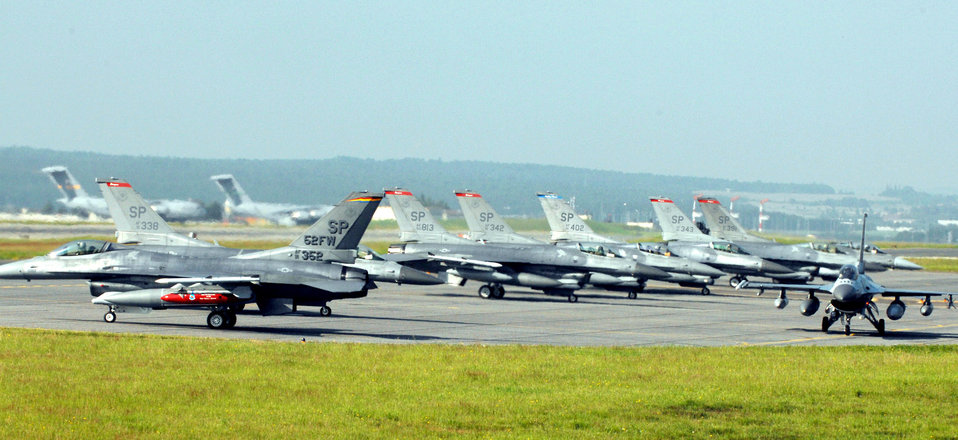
Pilots' missions relocate for Spangdahlem's runway repairs

Pilots from the 22nd Fighter Squadron taxi F-16 Fighting Falcons out to the runway June 11 in preparation for their flight to Nellis Air Force Base, Nev. Pilots and crew members from the 22nd FS 23rd and 81st Fighter Squadrons leaving the base to continue flying missions and training in other locations while the runway gets repaired.